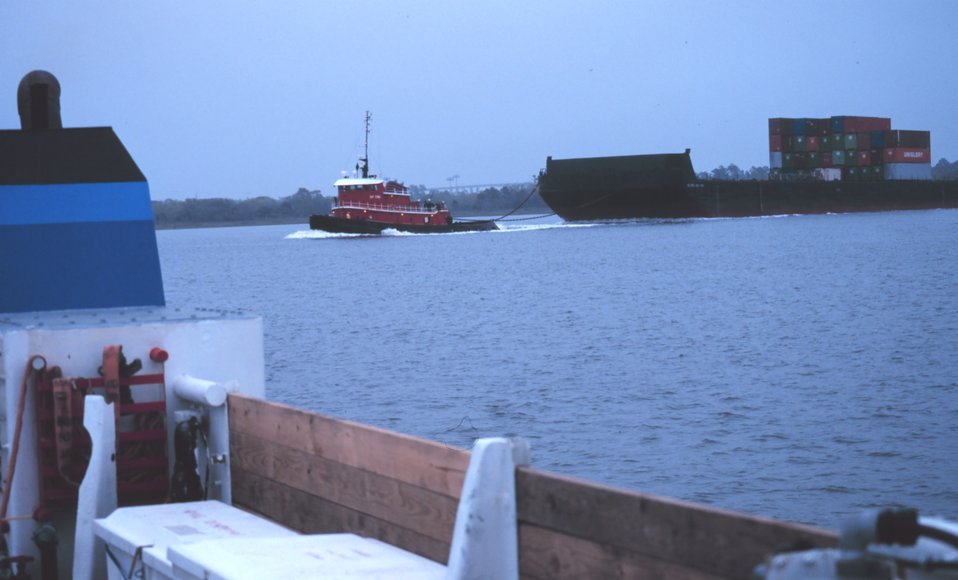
A barge-towing tugboat cruising by the FERREL during status and trends operations in Charleston Harbor.